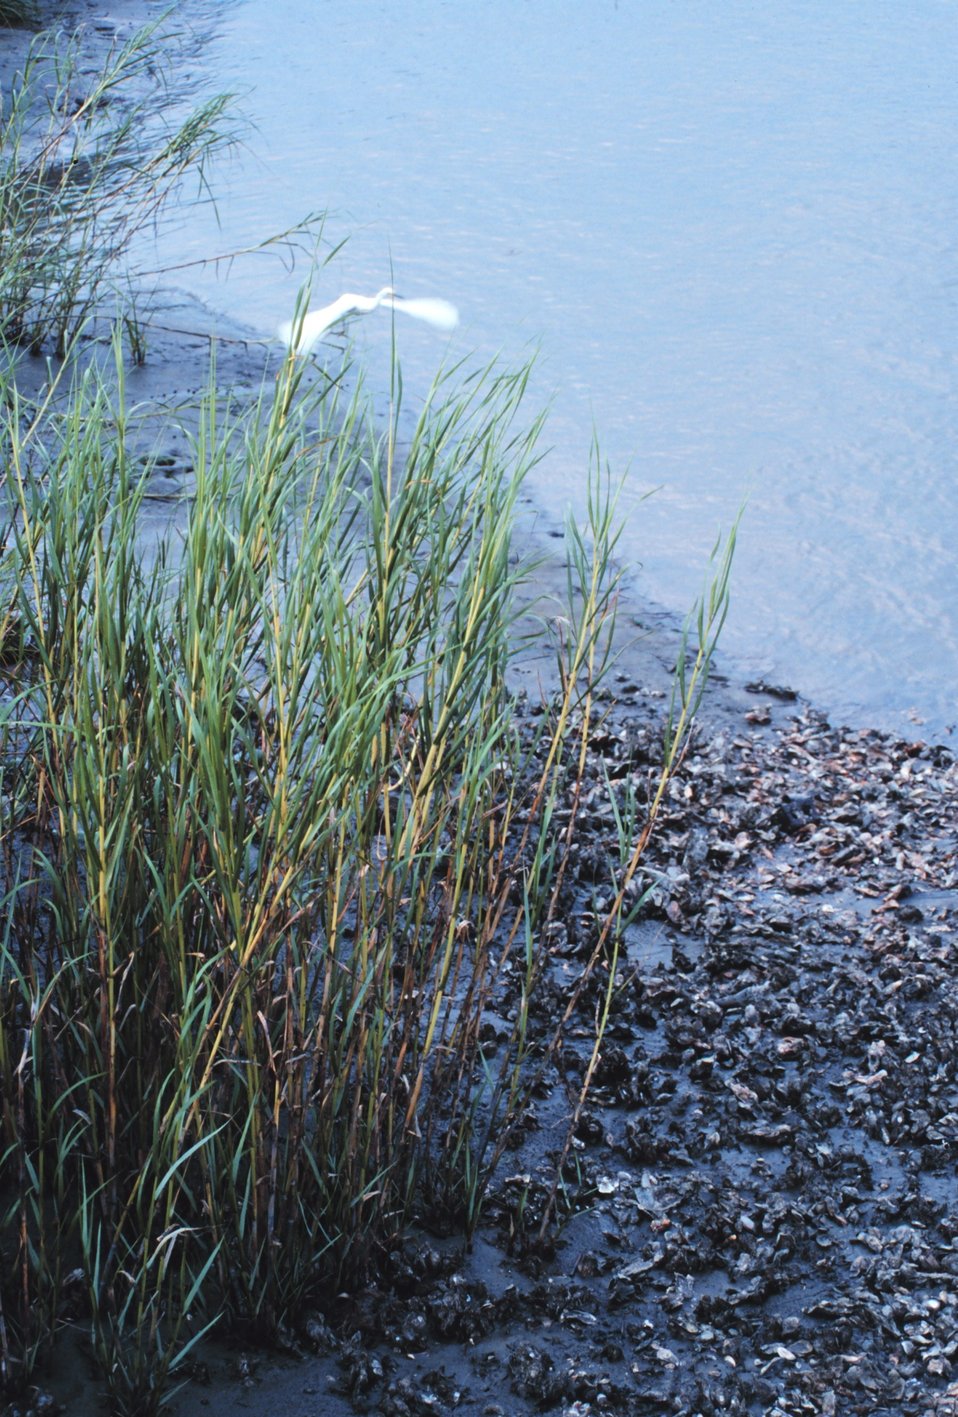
Tidal mudflats